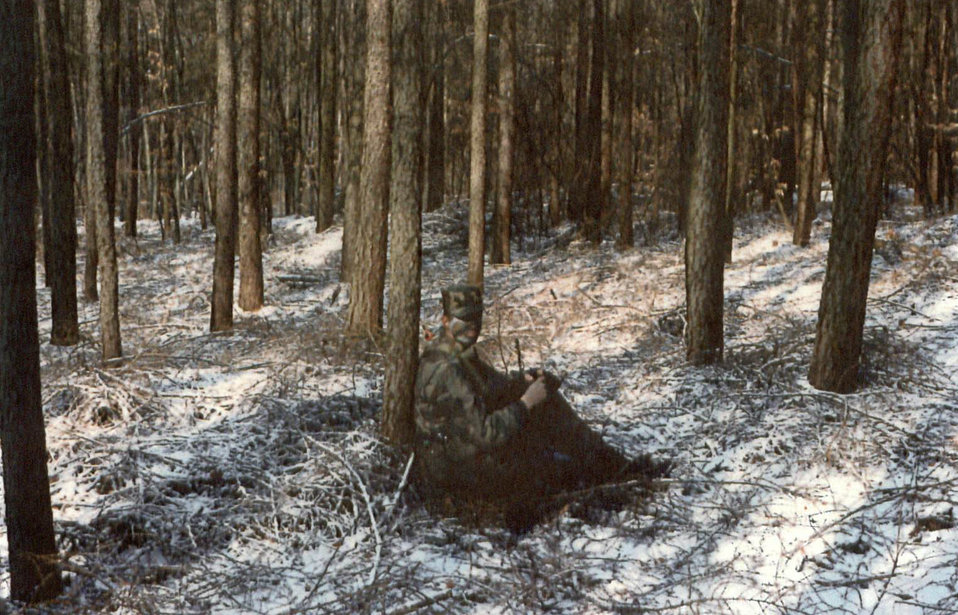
Jeff Krupka, the Section 7 Branch Manager in the Central Washington Field Office in Wenatchee, Washington in Region 1, was a Staff Sergeant in U.S. Army reconnaissance from 1985 to 1993 in both the regular Army and the Oregon National Guard.